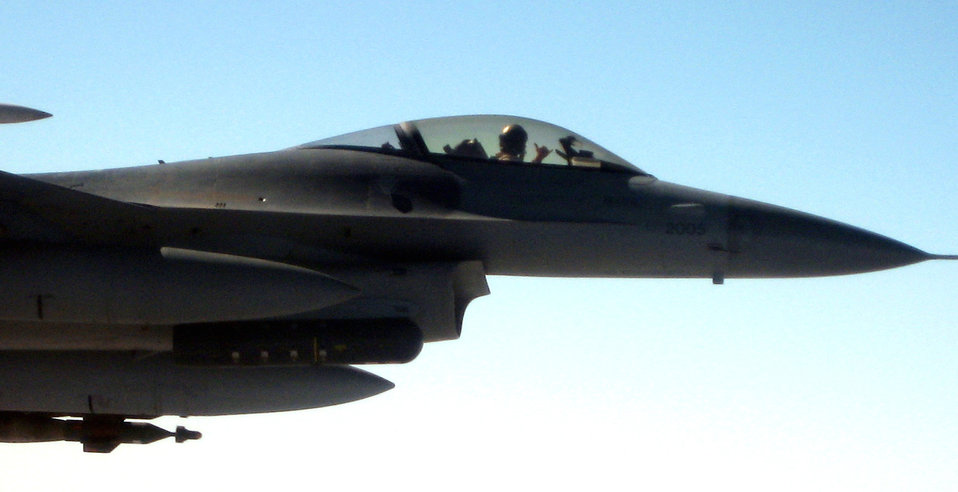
Refueling the fight

An F-16 Fighting Falcon pilot from Balad Air Base, Iraq, offers the hang loose sign before receiving fuel over Iraq from a KC-10 Extender assigned to the 380th Air Expeditionary Wing Nov. 20. The KC-10 refueled two jets that afternoon in support of Operation Iraqi Freedom.